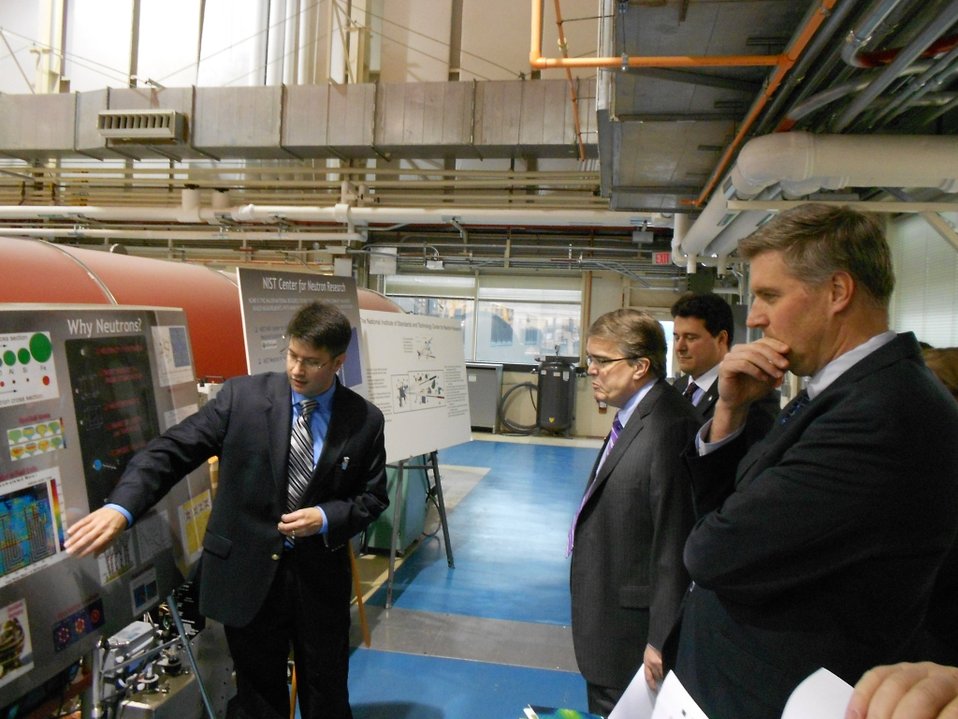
U.S. Representative Culberson Visit

NIST Center for Neutron Research Director Robert Dimeo (left) and NIST Director Pat Gallagher (far right) brief U.S. Representative John Culberson of Texas (center right) and Matteo Pasquali, Professor of Engineering Rice University (right) on NCNR research efforts.